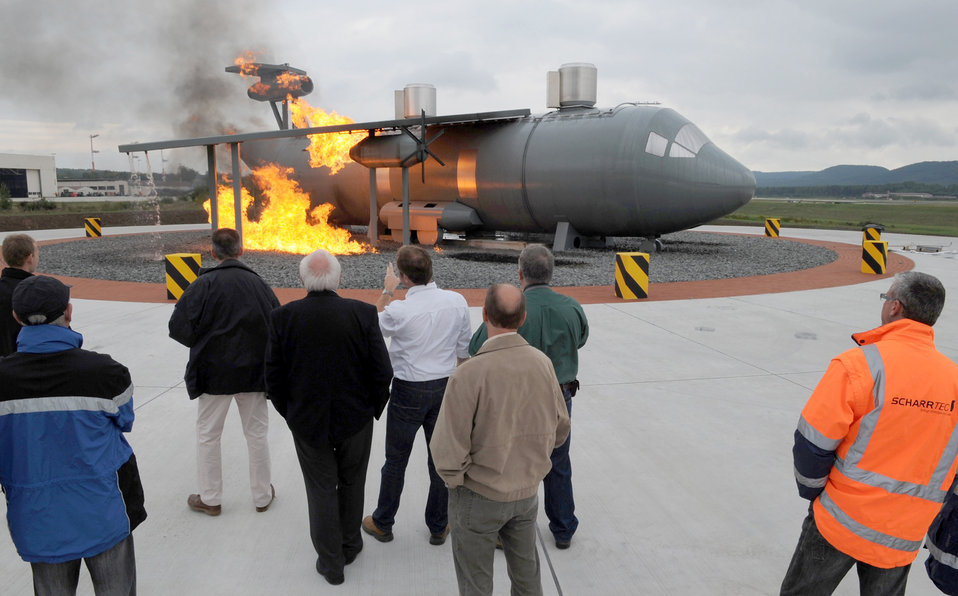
Aircraft Fire Training Site

Construction team members and fire trainers view a new aircraft fire training burn site Sept. 9, 2010 at Ramstein Air Base, Germany. The new burn site is the only aircraft training site in Germany and will help train in many aircraft scenarios.